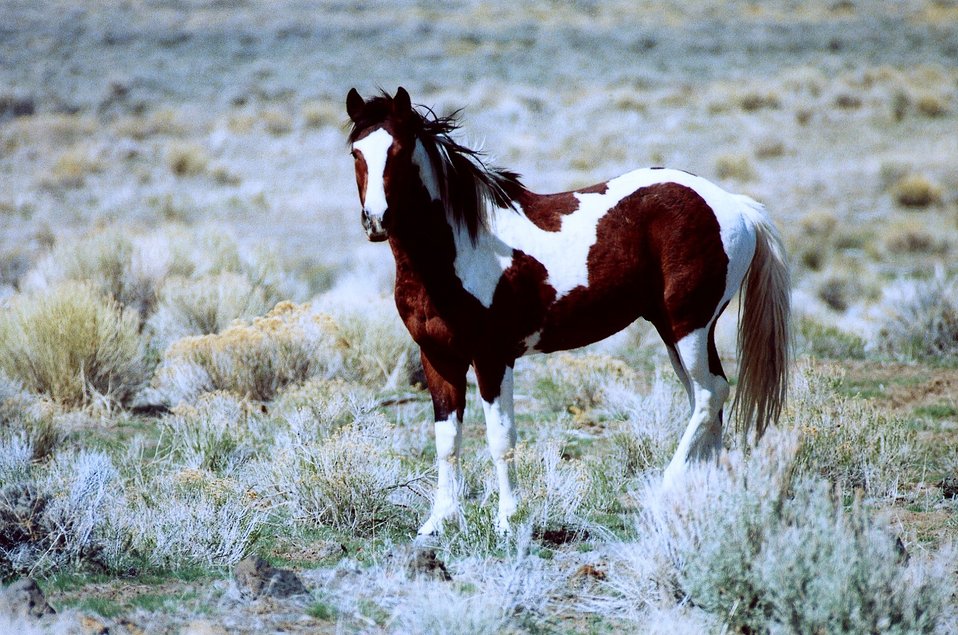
Medium shot of bachelor stallion.